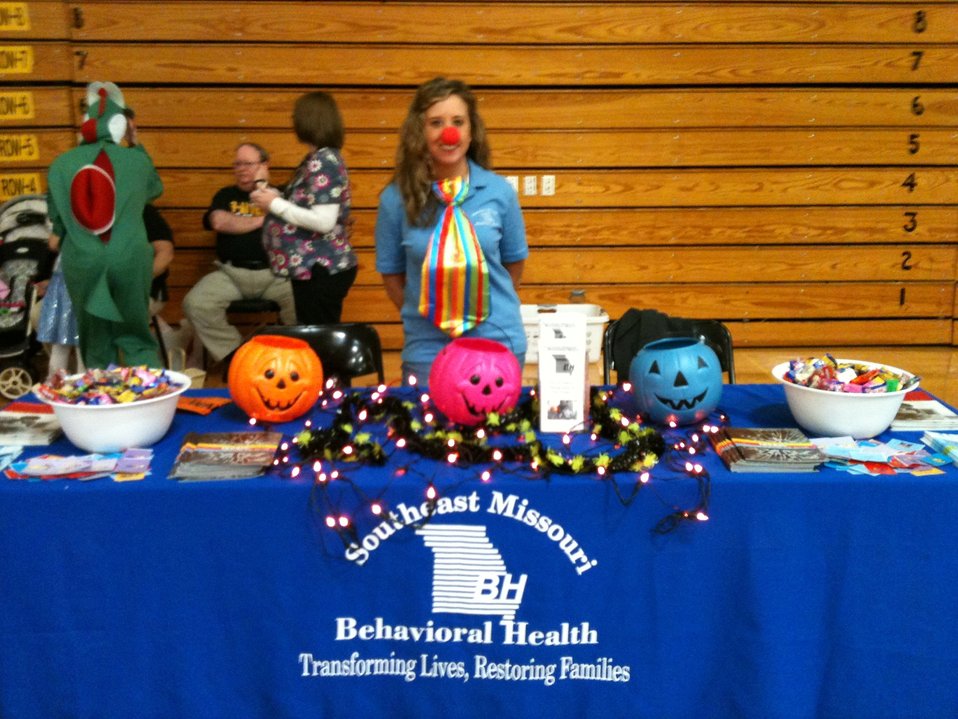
Halloween Safe Zone November 2011

A student from Missouri stands behind the “Halloween Safe Zone Booth” at a local community center during NDFW. Participants wore costumes and passed out candy, Shatter the Myths booklets and the Drug IQ Challenge to trick-or-treaters.